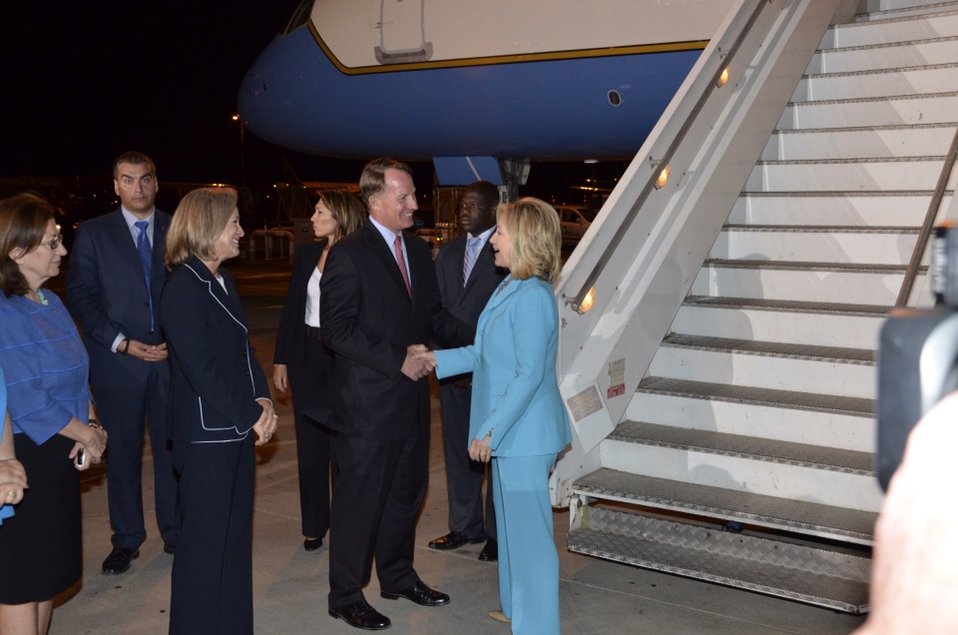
Secretary Clinton Is Greeted By Ambassador Smith and Mrs. Smith

U.S. Secretary of State Hillary Rodham Clinton is greeted by U.S. Ambassador to Greece Daniel Bennett Smith and Mrs. Smith, left, upon her arrival to Athens, Greece, on July 16, 2011.